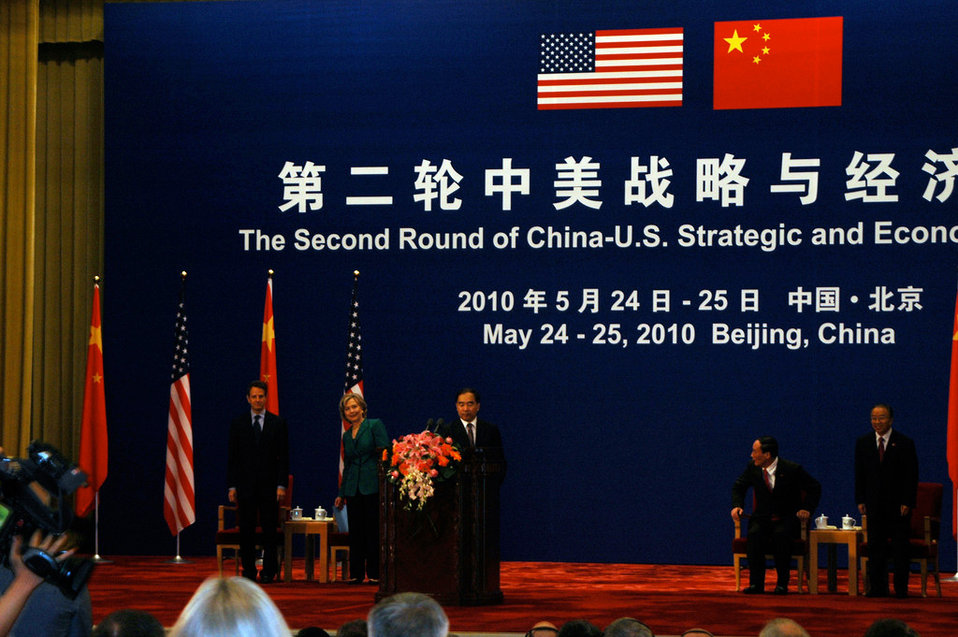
Secretary Clinton and Secretary Geithner Participate in Round Two of the Dialogue

U.S. Secretary of State Hillary Rodham Clinton and U.S. Secretary of the Treasury Timothy F. Geithner participate in the Second Round of the China-U.S. Strategic and Economic Dialogue in Beijing, May 24, 2010.